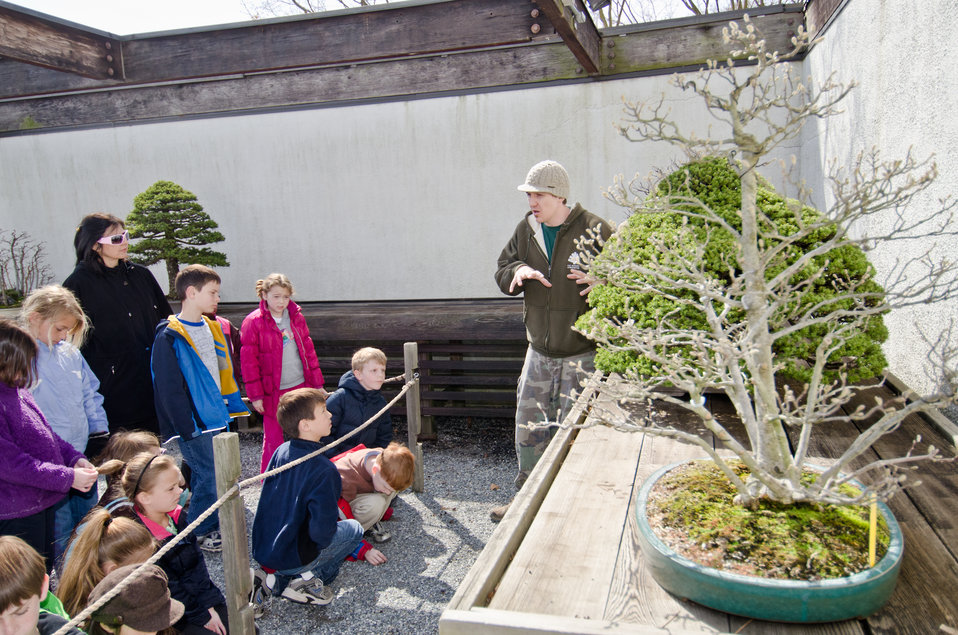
Assistant Curator Aarin Packard (green fleece jacket and knit cap) talks to second grade students from Sidwell Friends School, Washington, DC, who visited the National Bonsai & Penjing Museum, in the U.S. Department of Agriculture, Agriculture Research Service's National Arboretum on March 29, 2011. Mr. Packard told the children of the many special needs of caring for bonsai trees, and that the trees are simply regular trees, trained and controlled to grow in a small form. The trimming of trees are given great consideration over long periods of time before a major cut would be made. Packard stated that the trees may be small but they are often hundreds of years old. Before the tour, he did some research and found that one of the bonsai trees was donated by Princess Chichibu of Japan, a 1928 alum of Sidwell Friends School.